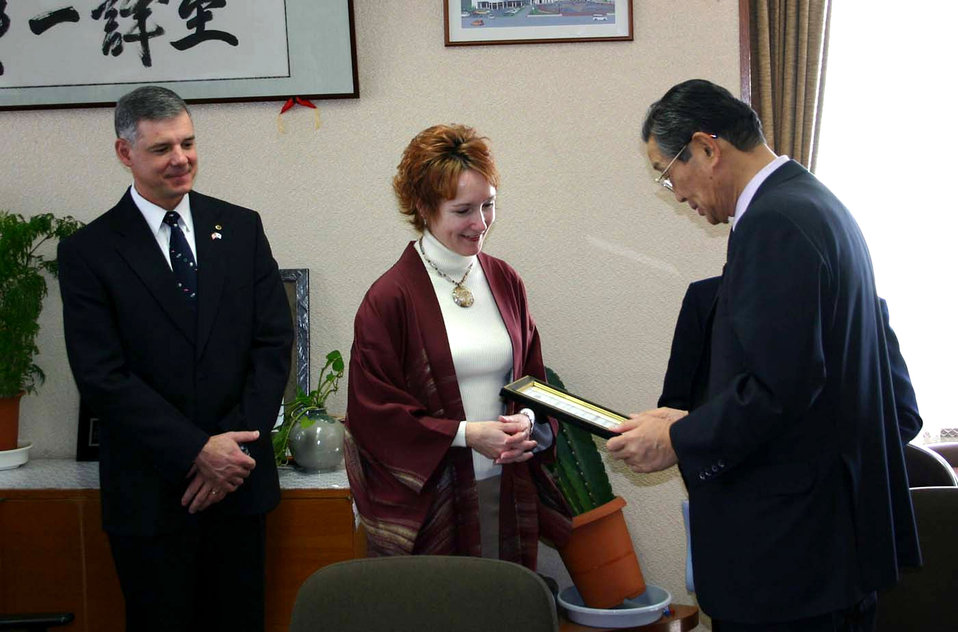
Champion for U.S.-Japan relations dies at age 66

Misawa City Mayor Shigeyoshi Suzuki (right) presents Marci Angelella with a goodwill ambassador plaque, a first for a 35th Fighter Wing spouse, while her husband, then 35th Fighter Wing Commander Brig. Gen. Sam Angelella, watches Jan. 12 in Misawa City, Japan. Mayor Suzuki, a longtime friend and supporter of American servicemembers, their families and the Air Force mission in Northern Japan, passed away May 1 from pneumonia at the age of 66. Mayor Suzuki served as mayor of Misawa City, representing a city of 40,000, for more than two decades and was in his sixth term upon his death. Throughout his years as mayor, he laid the foundation for strong relations between the base and the local area.